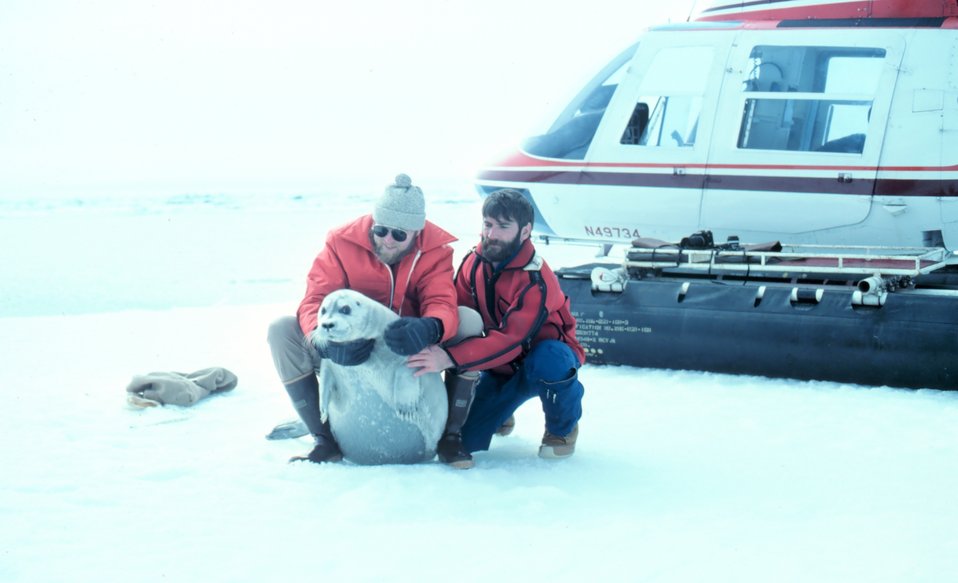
Helicopter transport for scientists during seal tagging operations. A not pleased bearded seal pup - Erignathus barbatus - restrained for tagging. Lieutenant Commander Bill Turnbull on left, Budd Christman on right.